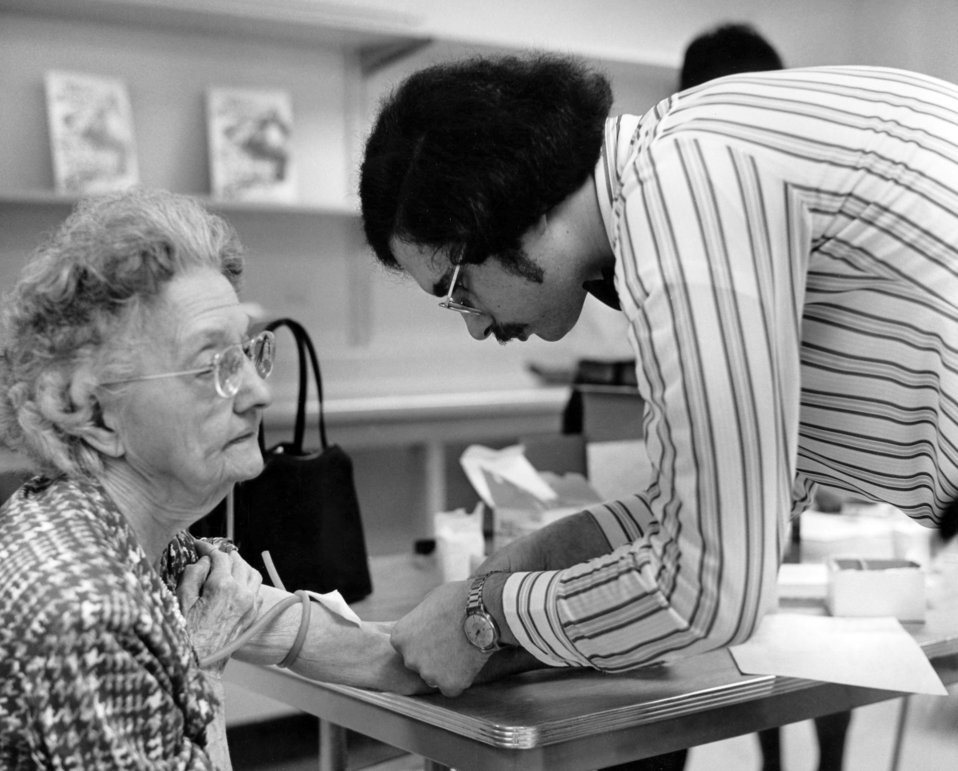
This 1976 photograph showed a public health scientist as he was drawing blood from an elderly woman, to be tested during the nationwide swine flu vaccination campaign that was started in October, 1976.